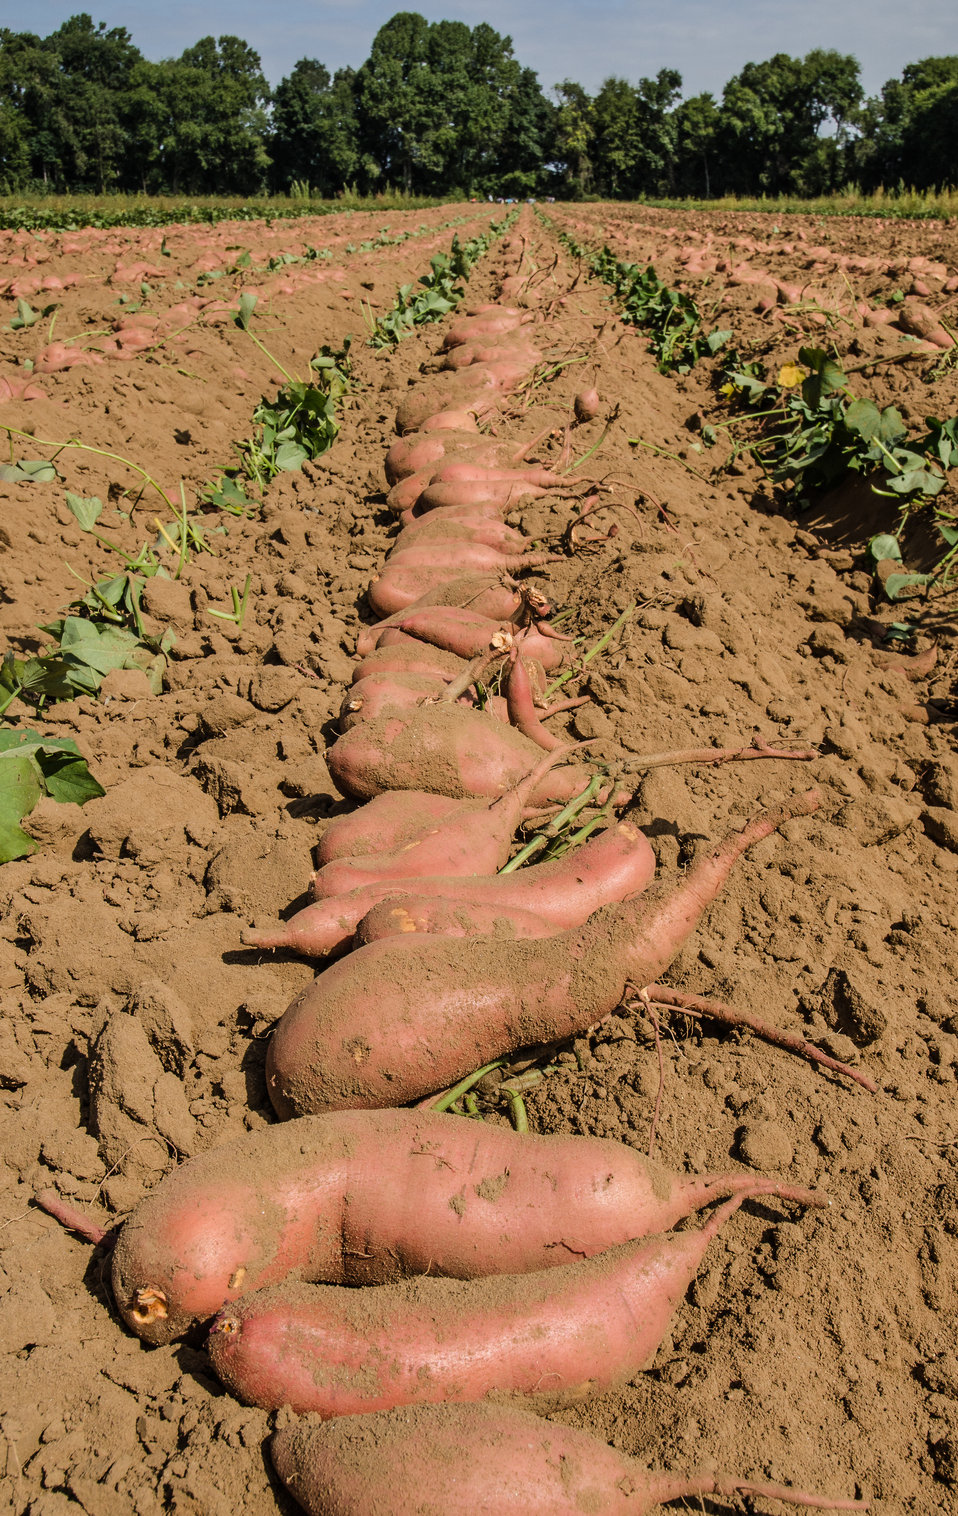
Harvested hand picked large sweet potatoes, at Kirby Farms in Mechanicsville, VA on Friday, Sept. 20, 2013. 200 acres of the farm are devoted to eggplant, spinach, beets, tomato, jalapeno peppers, melons and a variety of greens. Soybeans and small grain are grown on the remaining 300 acres. Using rotational crop practices allows Kirby Farms to double and triple crop yields. Wholesalers, who buy from this farm, sell the produce to major supermarkets in the Mid-Atlantic region, from North Carolina to Maryland. Restaurants in the local area prepare and serve the local bought produce to patrons in the Richmond, VA metropolitan area.